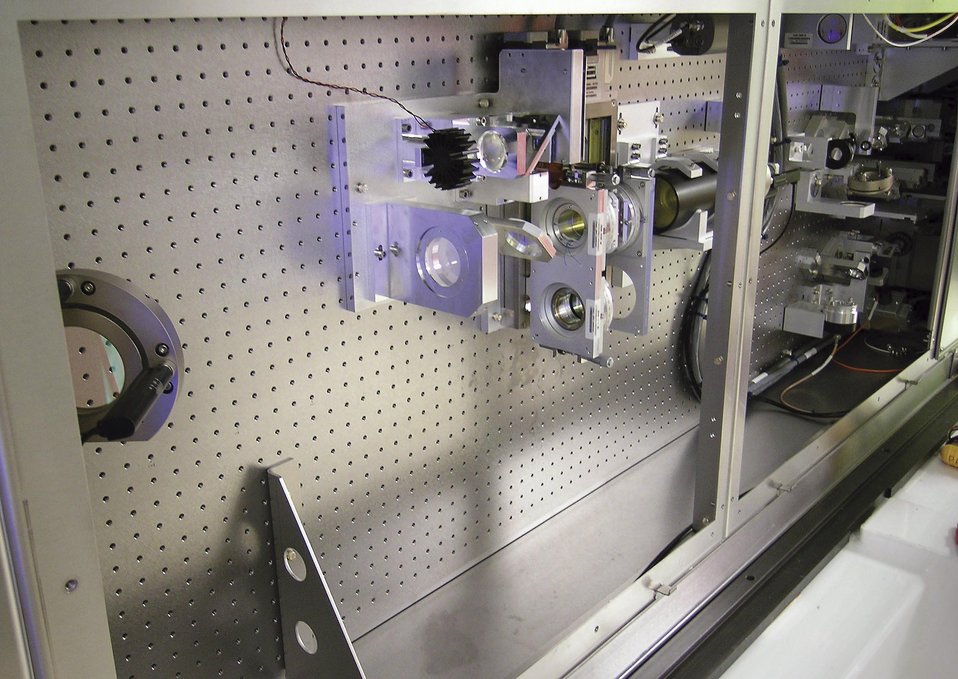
LEOPARD, A LIQUID CRYSTAL PROGRAMMABLE SPATIAL SHARPER DEVELOPED FOR NIF, USES PATTERED MASKS TO SMOOTH AND MODIFY THE SPATIAL SHAPE OF LASER PULSES.

The National Ignition Facility at LLNL enables key programs and technologies that support DOE's National Nuclear Security Administration Defense Programs and LLNL missions, ensuring that the national's weapons remain safe, secure and reliable. NIF, one of the cornerstones of DOE's stockpile stewardship program, will integrate the inertial confinement fusion program into the overall stockpile stewardship program and foster the development of associated laser technologies.